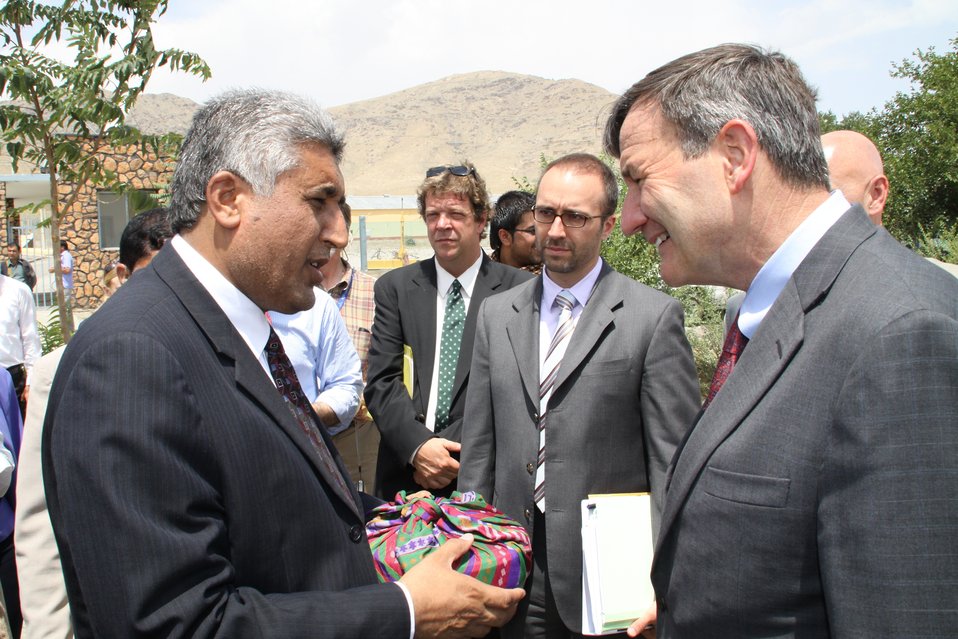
Badam Bagh Farm